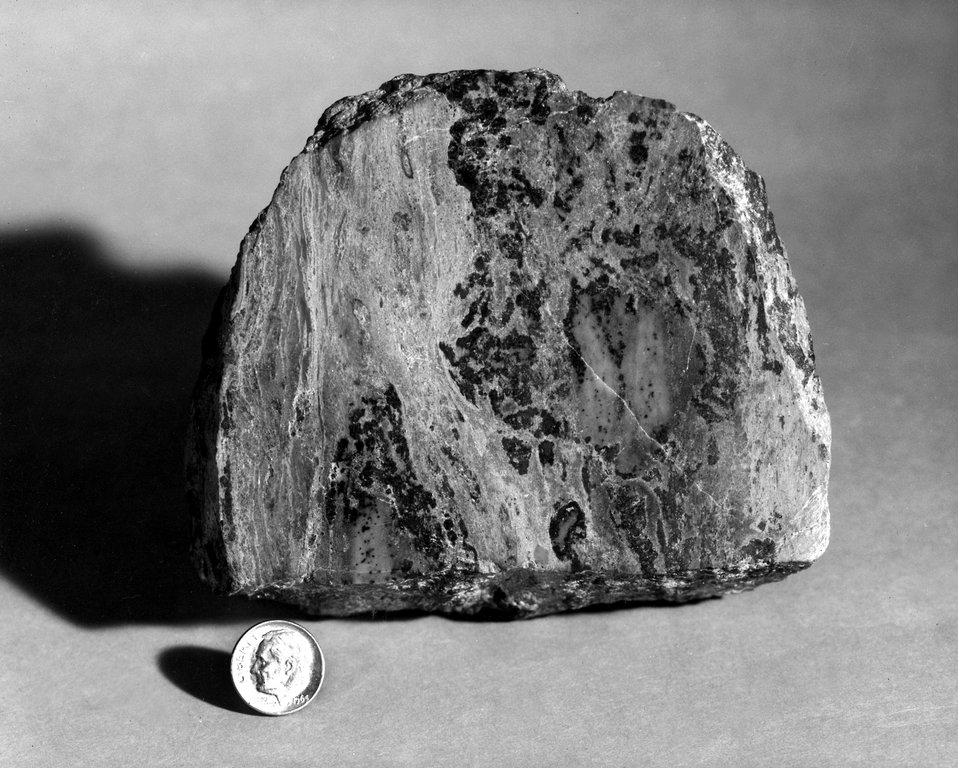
Polished slab of high-grade uranium ore in Todilto Limestone from the Flat Top mine, Grants District, New Mexico. c. 1972